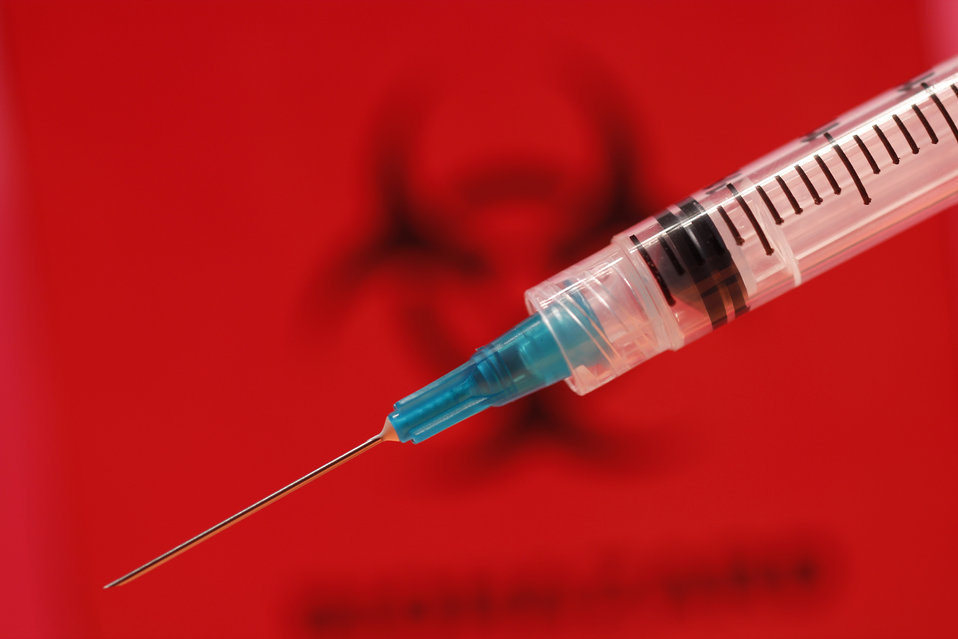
This image depicts a close view of the distal tip of an empty syringe revealing the metallic needle with its blue plastic proximal end that attached the needle to the syringe barrel. In the bright red background, though out of focus, you can still make out the universal biohazard symbol. The barrel is calibrated, however, it is not known what the calibrated tic marks represented, as to their measurement.